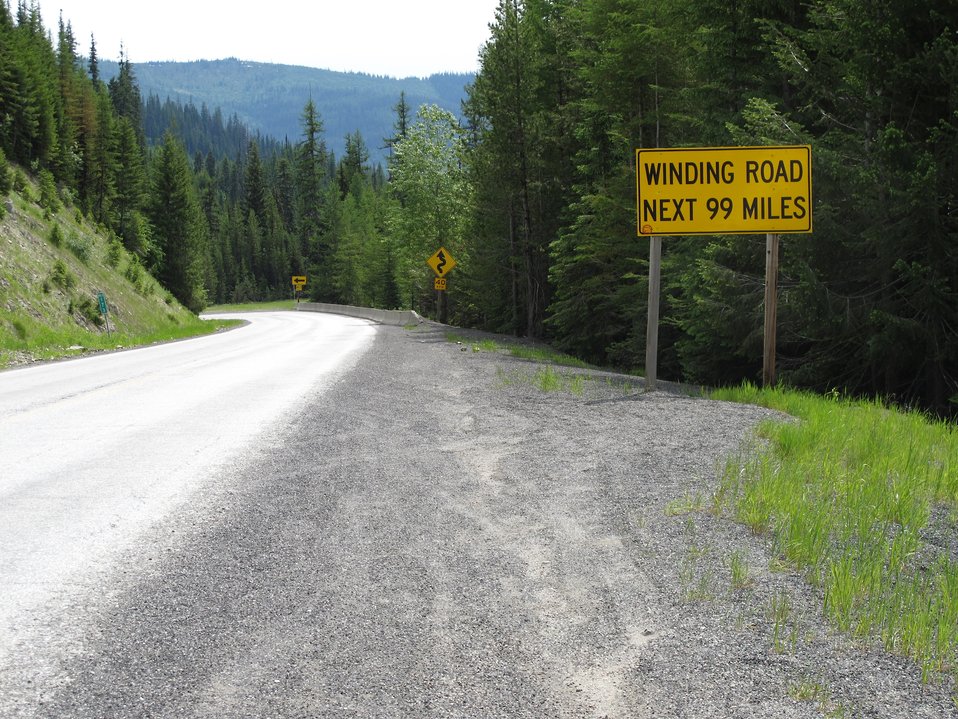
Road sign on U.S. Highway 12 in the Lolo Pass area. Lewis and Clark passed by the Lolo Pass area in September 1805.